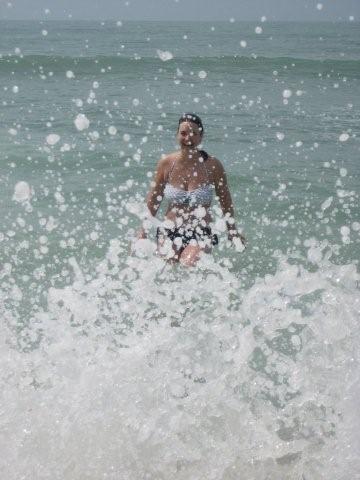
Uploaded by request of LeeAnn Lewandowski

Taken in Naples, Florida

Playing in the waves swimming in the Gulf of Mexico